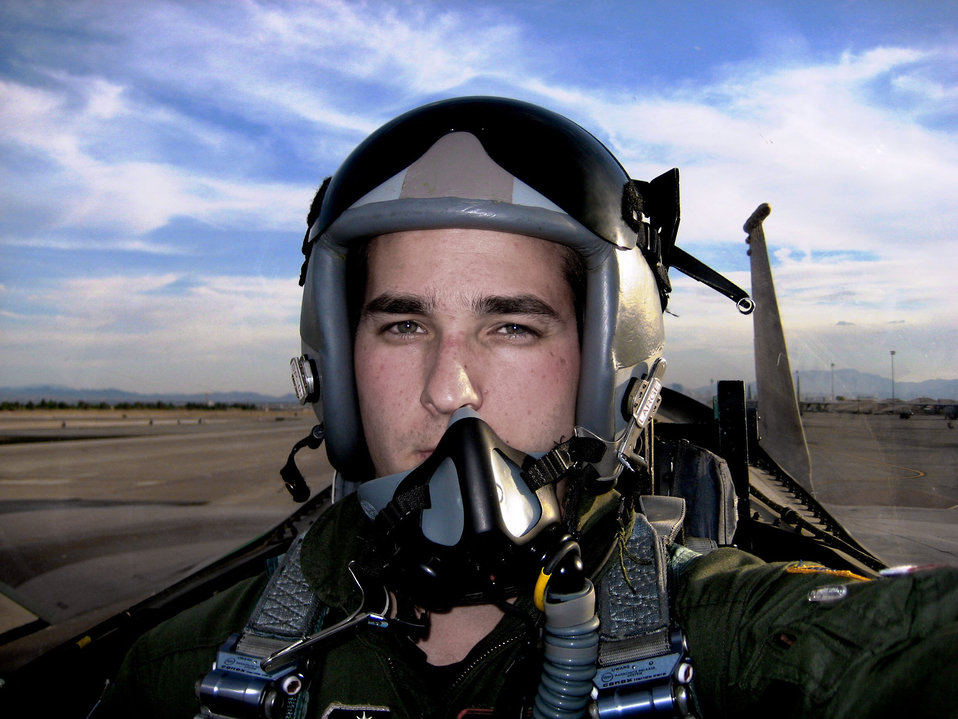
Cadet gets F-15 incentive flight

Cadet First Class Andrew Novak receives an incentive flight in the back seat of an F-15 Eagle during a training sortie with a pilot from the 65th Aggressor Squadron at Nellis Air Force Base, Nev. Cadet Novak spent five weeks at the Air Force Operational Test and Evaluation Center's Detachment 6 at Nellis as part of a mentoring program between AFOTEC and the United States Air Force Academy. The program leverages AFOTEC experience in operations, acquisitions and testing to create a comprehensive learning experience for Academy cadets during their academic and professional development. Cadet Novak is an aeronautical engineering student.